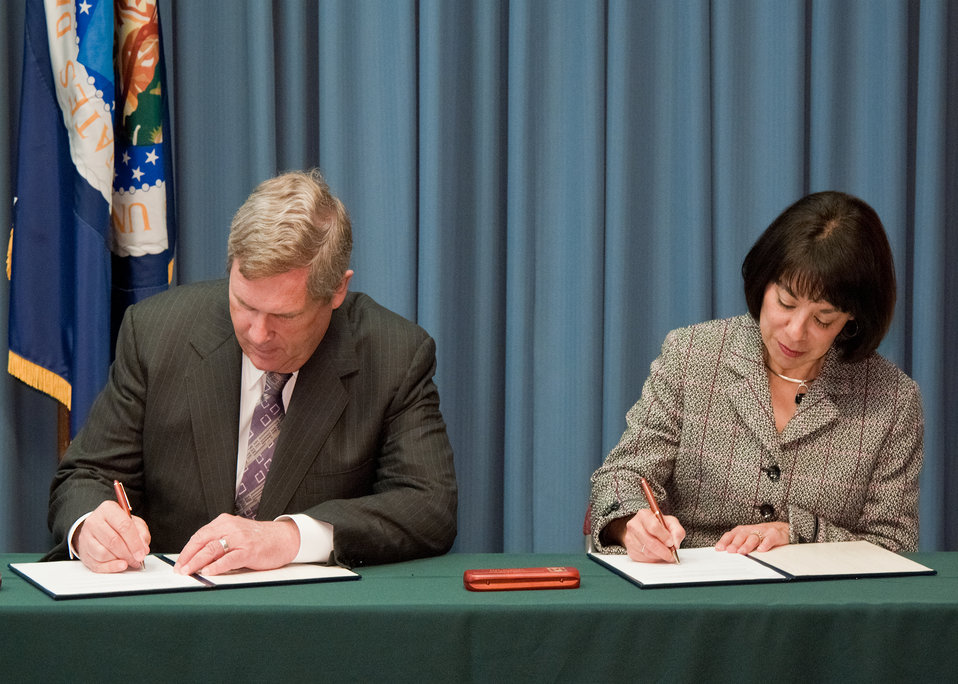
Agriculture Secretary Tom Vilsack and Sandra Serrano, Chancellor, Kern Community College District in Southern California and Chair of the Hispanic Association of Colleges and Universities sign a Memorandum of Understanding for the continuing partnership between the United States Department of Agriculture and the Hispanic Association of Colleges and Universities at the United States Department of Agriculture in Washington, DC, Friday, March 18, 2011. The Hispanic Association of Colleges and Universities (HACU) is a non-profit organization whose mission is to promote the success of Hispanics in higher education. In the United States, HACU represents more than 400 higher education institutions that together enroll two thirds of all Hispanics in higher education. This competitive USDA/HSI grant program is designed to promote and strengthen the ability of Hispanic Serving Institutions to carry out education programs that attract, retain, and graduate outstanding students capable of enhancing the nation's food and agricultural scientific and professional work force.